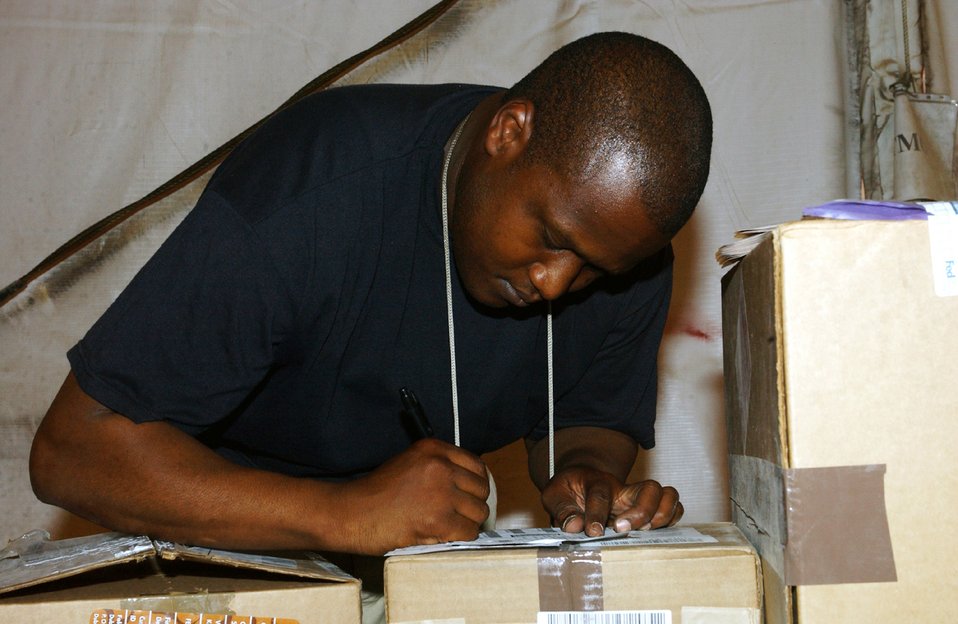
Supply Airmen run mission lifeline at Ali Base

Staff Sgt. Shannon Alexander tracks information on items coming into the warehouse at Ali Base, Iraq, on Wednesday, June 28. Sergeant Alexander is a supply technician assigned to the 407th Expeditionary Logistics Readiness Squadron.